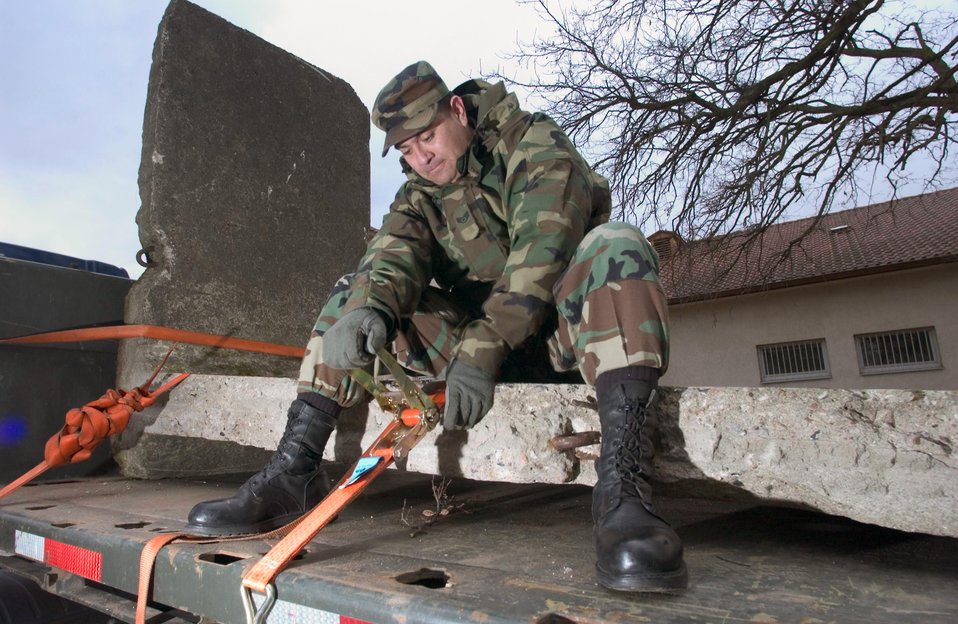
Moving a piece of history

RHEIN-MAIN AIR BASE, Germany -- Staff Sgt. David Reyes prepares to ship a section of the Berlin Wall to Ramstein Air Base, Germany, where it will be displayed. Sergeant Reyes is a vehicle operator with the 435th Logistics Readiness Squadron at Ramstein.